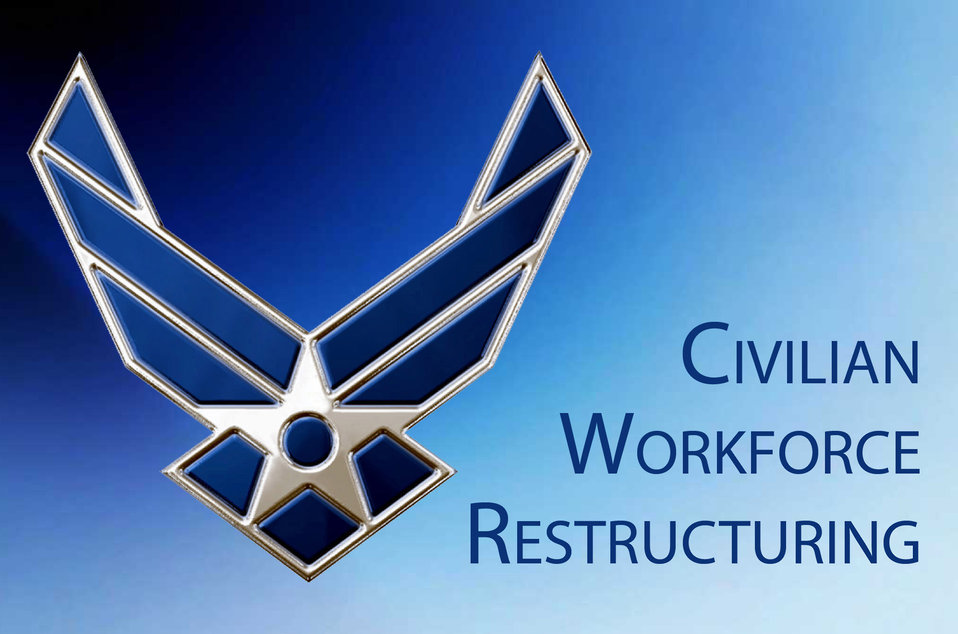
Civilian Workforce Restructuring